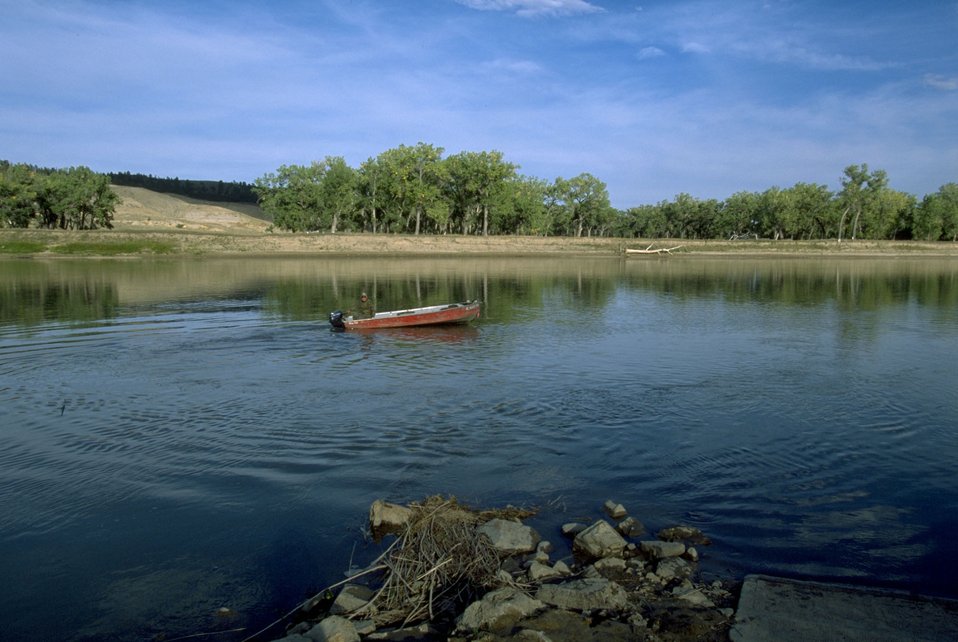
Motorboat at Kipp Recreation Area